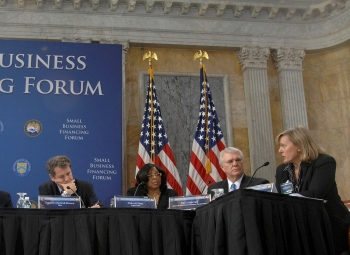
Treasury and SBA Host a Small Business Financing Forum

Jean Wojtowicz of Indiana Statewide CDC discusses challenges for underserved markets and industries on the third panel.